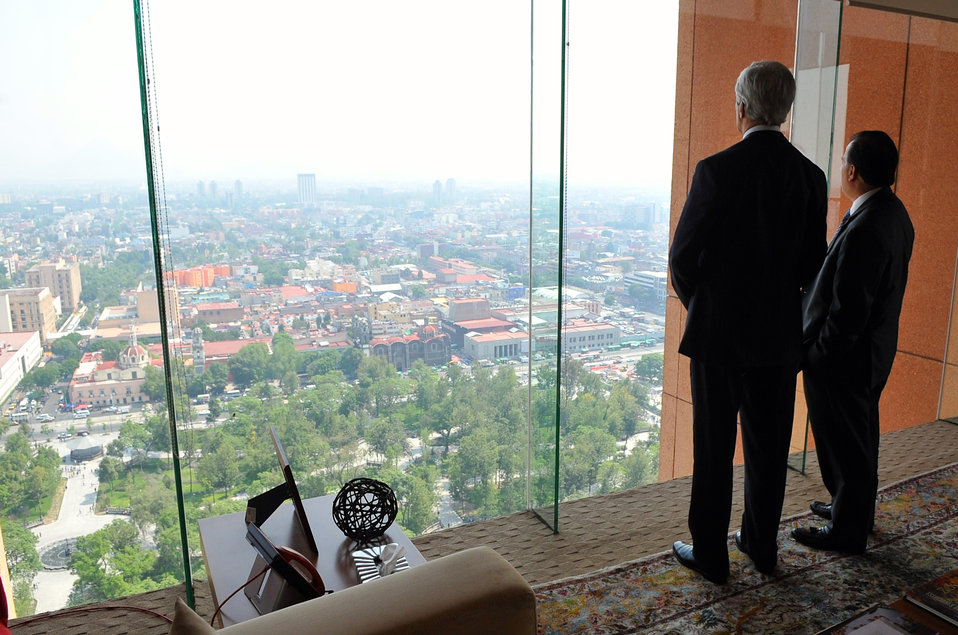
Mexican Foreign Secretary Meade Shows Secretary Kerry View From His Office

Mexican Foreign Secretary José Antonio Meade shows U.S. Secretary of State John Kerry the view from his 22nd-floor office before a working lunch at the Secretariat of Foreign Affairs in Mexico City on May 21, 2014.